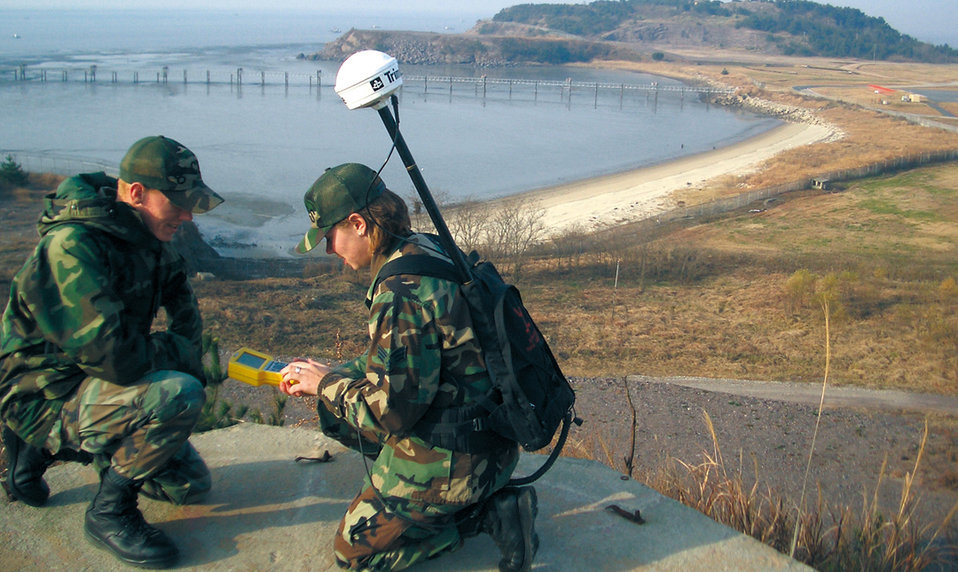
CE mapping goes digital with click of button

KUNSAN AIR BASE, South Korea -- Airman 1st Class Shannon Davis watches as Senior Airman Erin Farris uses a Global Positioning System hand-held unit to map a part of the base here during a GeoBase survey. They are assigned to the 8th Civil Engineer Squadron.